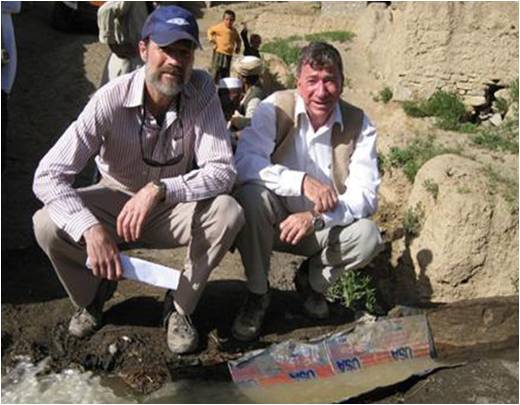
Safe Plentiful Water Thanks to USAID